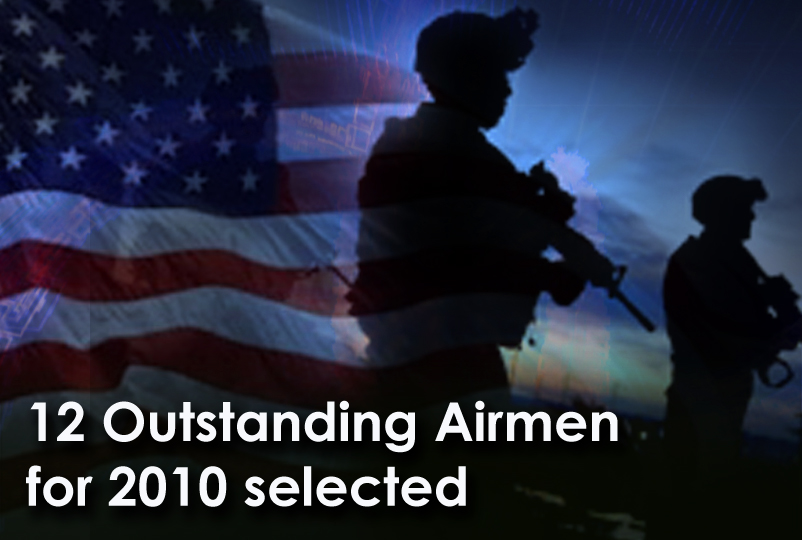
Air Force officials name 12 Outstanding Airmen of the Year